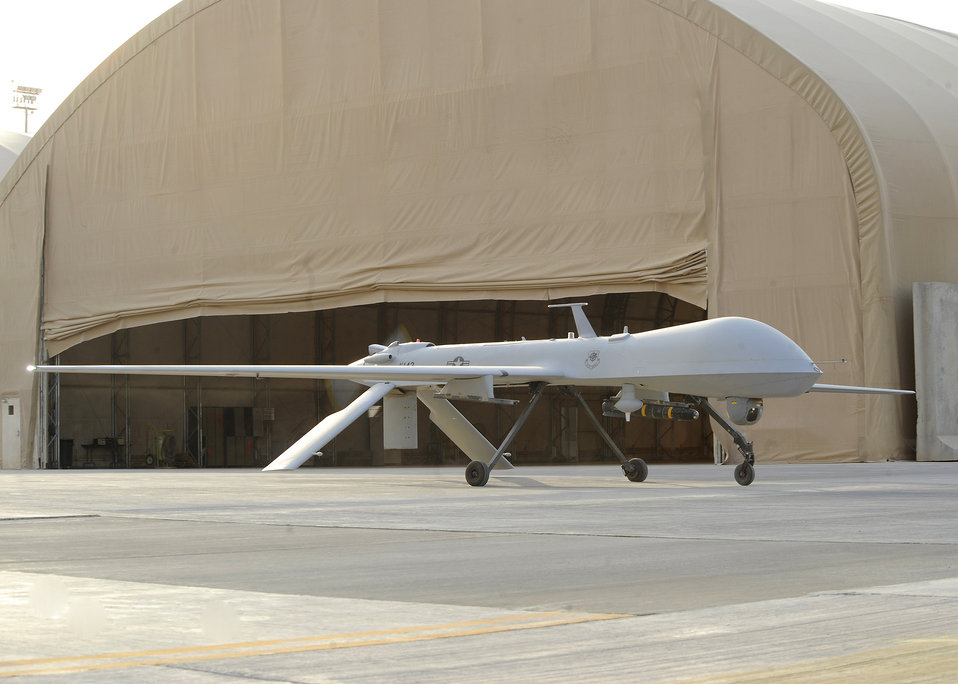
Balad Predators

An MQ-1B Predator taxis out to the runway for a routine push off mission Aug. 3, 2010, at Joint Base Balad, Iraq. The MQ-1B is a long-endurance unmanned aircraft system that conducts close-air support, air interdiction, and intelligence, surveillance and reconnaissance missions.